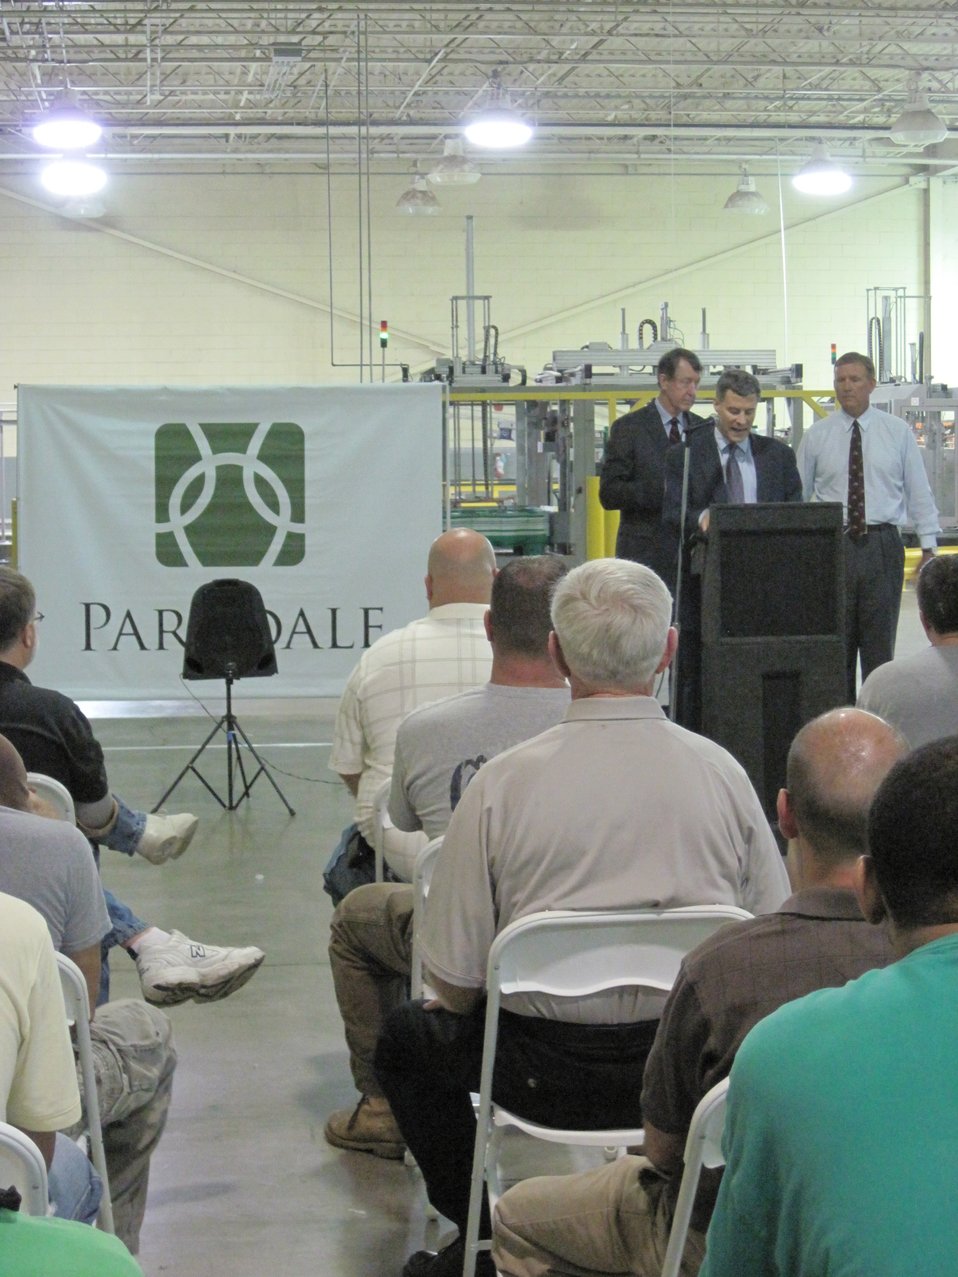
Krueger in NC, 7/12/10

Alan B. Krueger, Assistant Secretary for Economic Policy and Chief Economist at the Treasury Department, announced the release of a new report showing that, from February 2010 to May 2010, businesses have hired an estimated 4.5 million new workers who had been unemployed for eight weeks or longer, making those businesses eligible to receive up to a projected $8.5 billion in HIRE Act tax exemptions and credits for hiring the unemployed.

'Targeted, temporary incentives like the HIRE Act are helping to fuel a private-sector-led recovery. After a period of extraordinary difficulty, the economy is continuing to grow and private sector companies have added jobs for six straight months.'